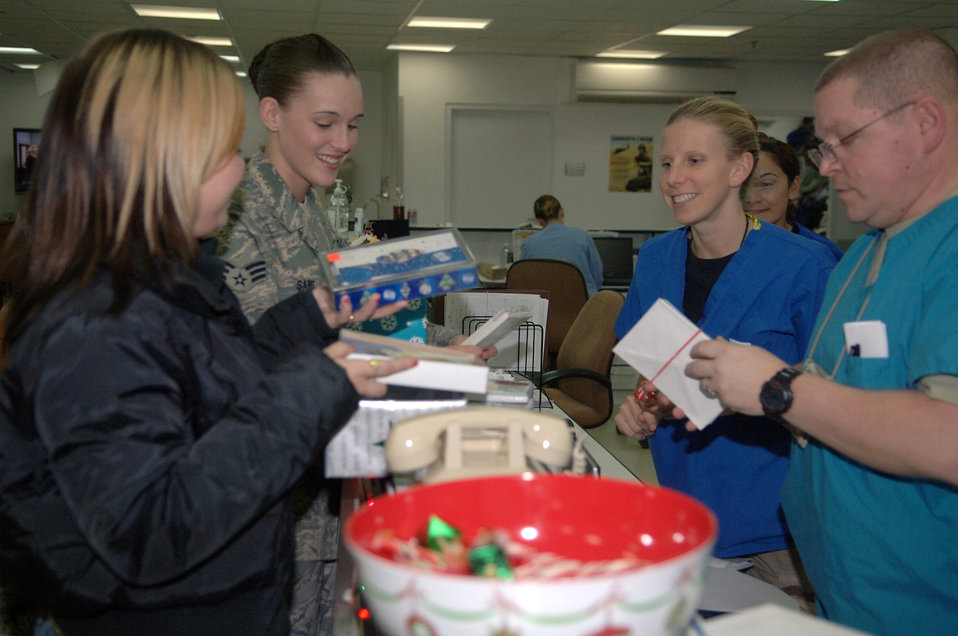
Cards for Troops help spread holiday cheer

Frances Gonzalez (from left to right) and Senior Airman Amber Sams pass out holiday cards to Capt. Colleen Lamp and Tech. Sgt. John Lafauci Nov. 30 at Balad Air Base, Iraq. Airman Sams is a 332nd Expeditionary Services Squadron recreation coordinator deployed from Langley Air Force Base, Va. Ms. Gonzalez is a Cards for Troops volunteer. Captain Lamp and Sergeant Lafuci are assigned to the 332nd Expeditionary Medical Operations Squadron intermediate care ward and deployed from Lackland AFB, Texas.